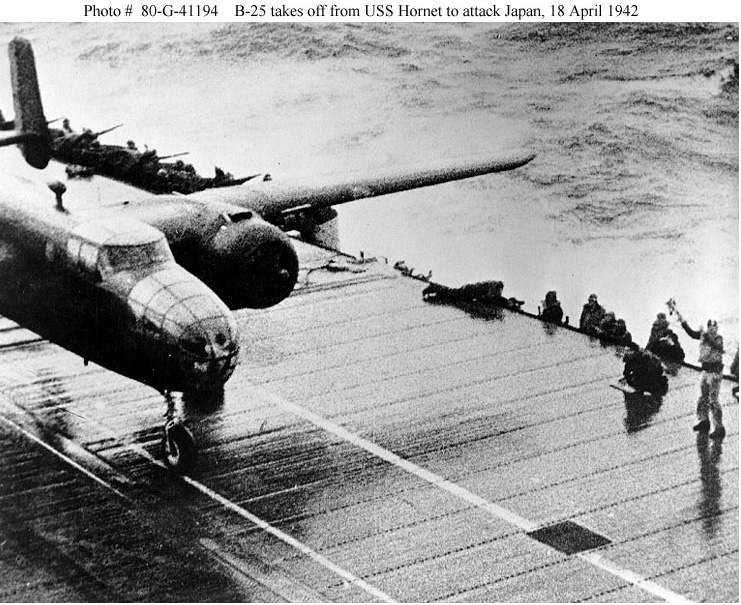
Doolittle's Raid

An Army Air Forces B-25B bomber awaits the takeoff signal on the flight deck of USS Hornet (CV-8), as the raid is launched April 18, 1942. Note the flight deck officer holding launch flag at right, and white stripes painted on the flight deck to guide the pilot's alignment of the plane's nose and port side wheels.